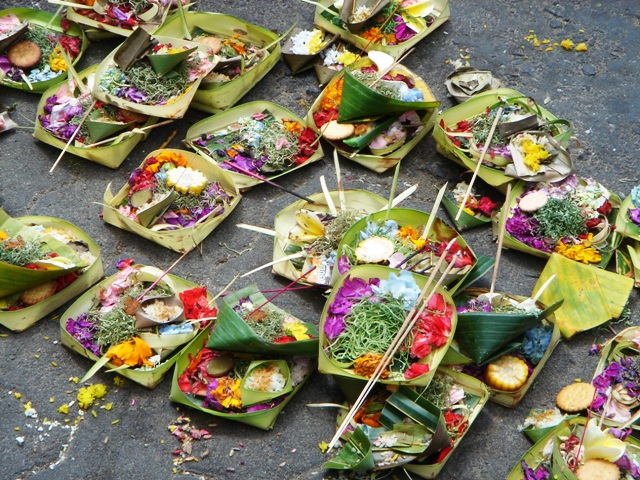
Taken by (WT-shared) Shoestring Was in category Bali on wikivoyage Русский: Ритуальные подношения богам «кананг сари»